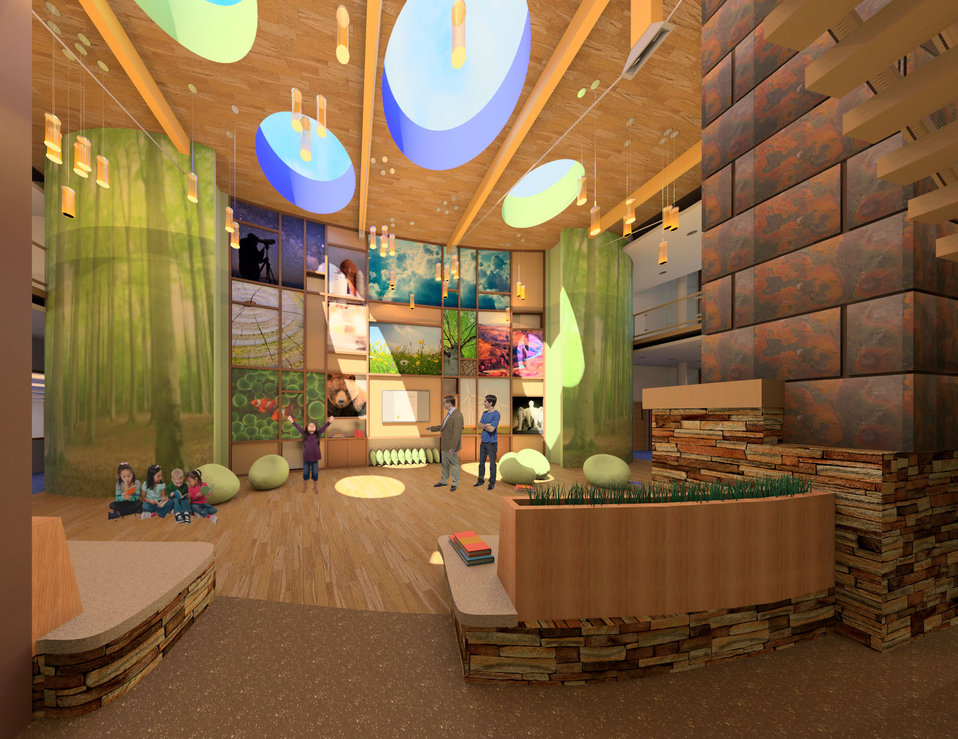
Bear Creek Feature Wall

Bear Creek Community Charter School in Bear Creek Township recently received U.S. Department of Agriculture (USDA) Rural Development (RD) Community Facility Loan funding to construct a new charter school to provide innovative education opportunities for K-8th grade. Photo is an interior architectural rendering of the central commons courtesy of Hemmler and Camayd Architects.